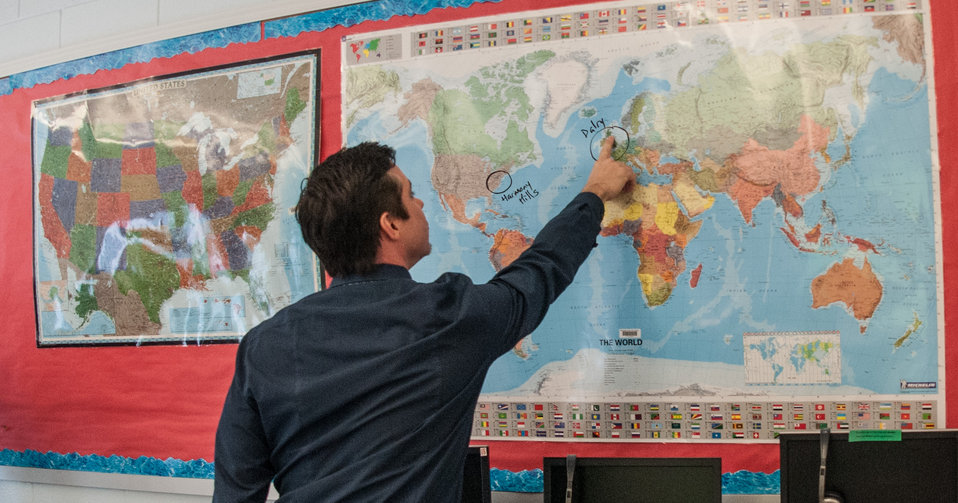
Harmony Hills Elementary School 5th grade teacher Mr. Damien Grasso indicates on a map, where Dalry Primary School is, in North Ayrshire, Scotland, United Kingdom, during the inaugural International School Meals Day at Harmony Hills Elementary School in Silver Spring, MD, on Friday, March 8, 2013. Department of Agriculture (USDA) Food, Nutrition and Consumer Services Deputy Under Secretary Dr. Janey Thornton, school officials and students participated at this one of 14 national school sites, paired with 14 international school sites. Mr. Grasso's 5th grade class was paired with Mrs. Karen McAllister’s class at Dalry Primary School in North Ayershire, United Kingdom using a real-time online video connection. The children shared some of the healthy eating and physical activity choices available to them. The Dalry fitness program includes Zumba classes, and Harmony Hills includes a Fitness Club. Both schools have soccer programs. The Harmony Hills 5th grade students shared their thoughts about their healthy menu items, mango, kiwi, and hummus. The Dalry students honored the Maryland students, by having prepared a Southern Maryland dessert, Smith Island cake (made with 7 thin cake layers). Initially, 14 classrooms (grades 3-8) in the U.S. are now connected with 14 classrooms in Scotland, UK. USDA plans to expand the initiative to include partnerships with additional countries in future years. Harmony Hills participates in the Maryland Meals for Achievement (MMFA), In-Classroom breakfast program, the fresh fruit and vegetable program, and the summer food service program. USDA's Food and Nutrition Service oversees the administration of 15 nutrition assistance programs that work in concert to form a national safety net against hunger. Learn more by visiting www.fns.usda.gov and twitter @USDANutrition.